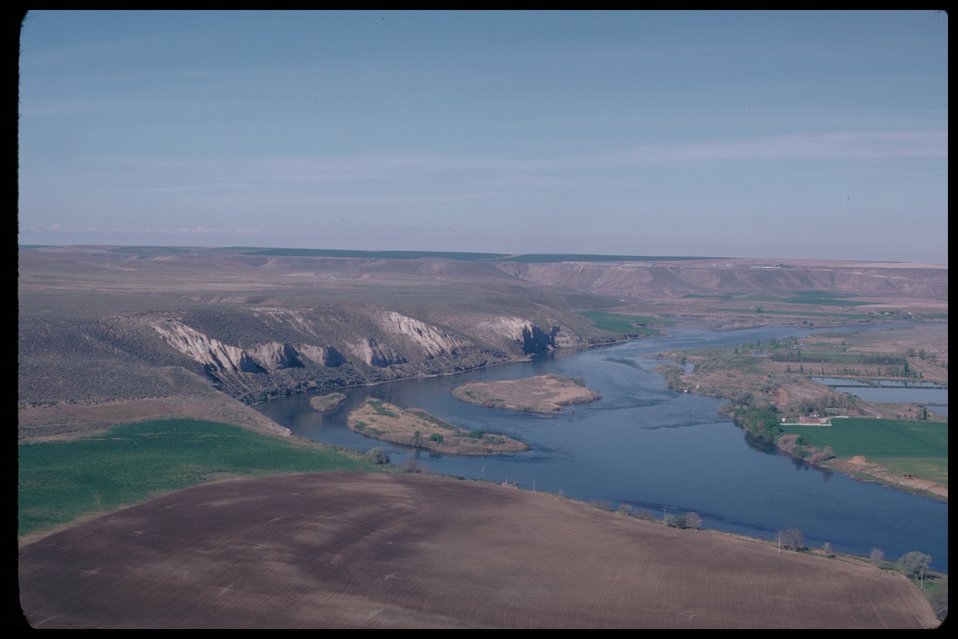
Oregon Trail - Two Island Crossing near Glenns Ferry Lower Snake River District